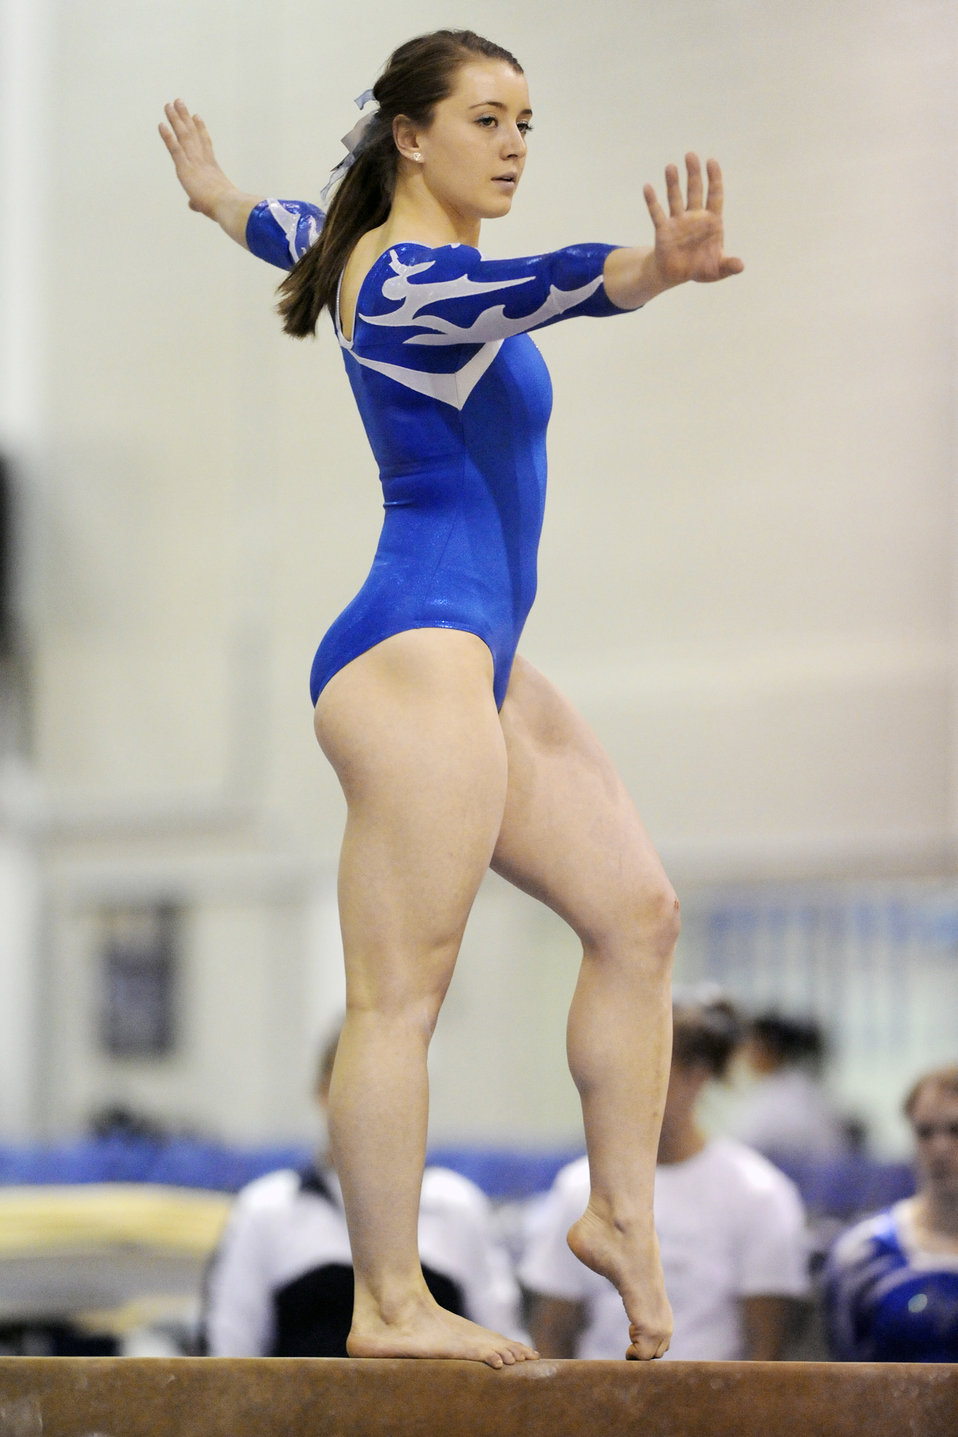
A gymnast on a balance beam

Falcon freshman Erin Brown competes on the balance beam during Air Force's meet against University of California Davis Jan. 30, 2010, in the Academy's Cadet Gymnasium in Colorado. Air Force lost the meet 191.575 to 185.300 despite two event titles.